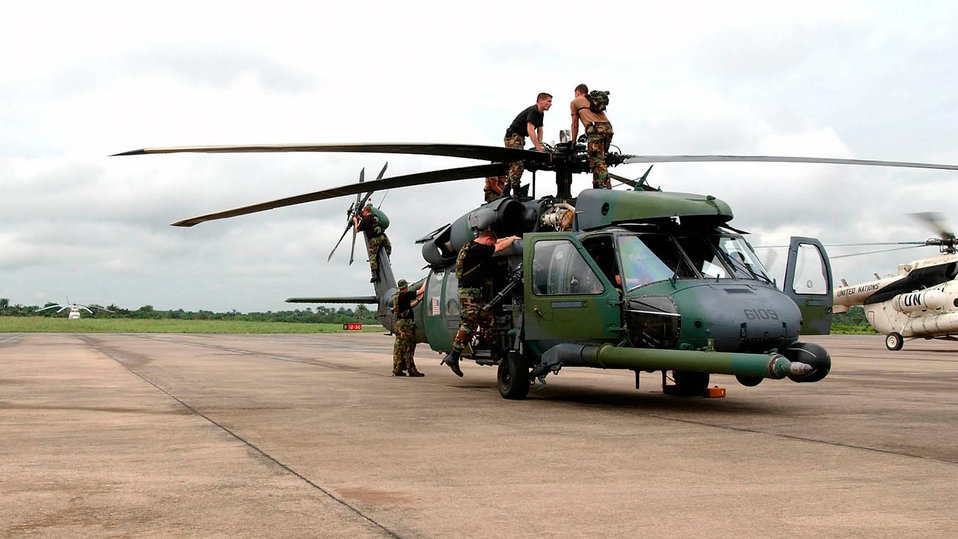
Mission accomplished

LUNGI, Sierra Leone -- Airmen from the 85th Maintenance Squadron check an Air Force HH-60G Pave Hawk helicopter following a mission July 21. The mission flew 41 Marines with an antiterrorism security team to the U.S. Embassy at Monrovia, Liberia. The airmen are part of the 398th Air Expeditionary Group providing recovery and emergency evacuation in Liberia. The 85th MXS is deployed from Naval Air Station Keflavik, Iceland.